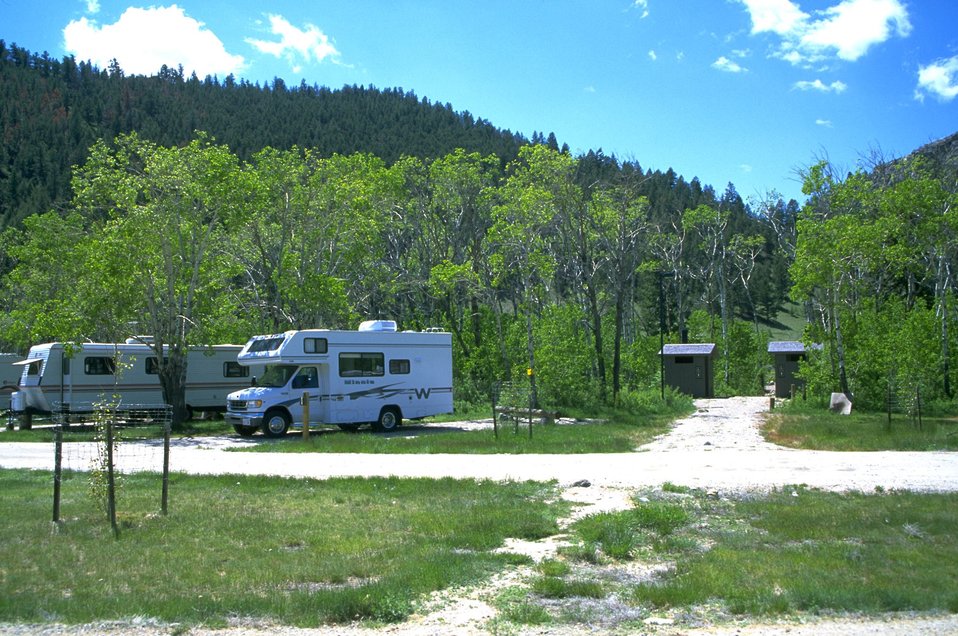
Campers and outhouses among the trees at Divide Campground